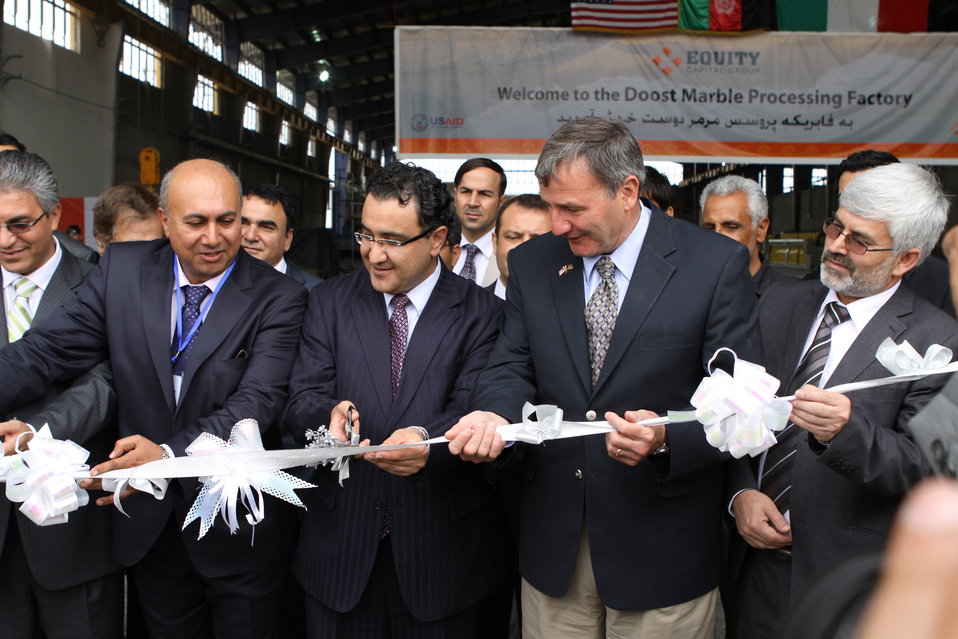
100525 Hirat Marble Conference 065